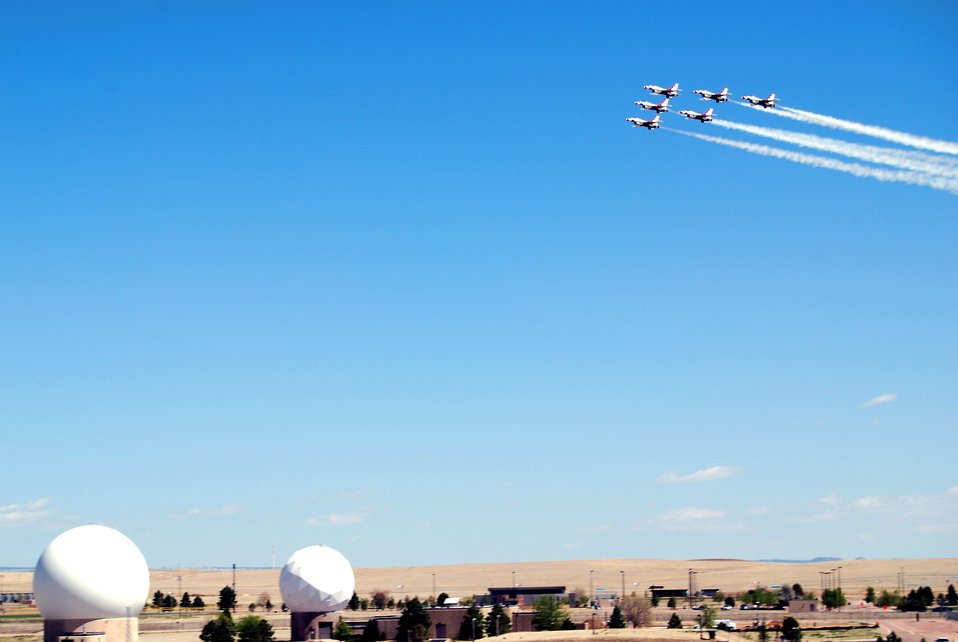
Airpower meets space power

Airpower met space power at Schriever Air Force Base, Colo., as the U.S. Air Force Thunderbirds flew over the base May 25. The Thunderbirds were in nearby Colorado Springs to perform at the Air Force Academy graduation May 28.